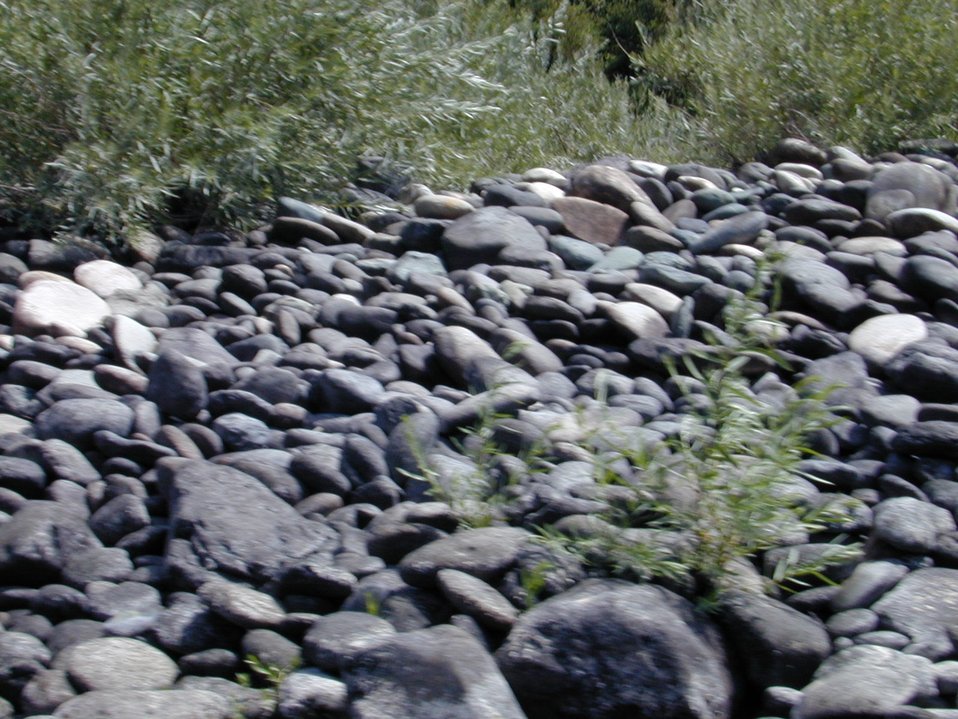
Rock imbrication along the Lower Salmon River Cottonwood Field Office UCSC Upper Columbia Salmon Clearwater District